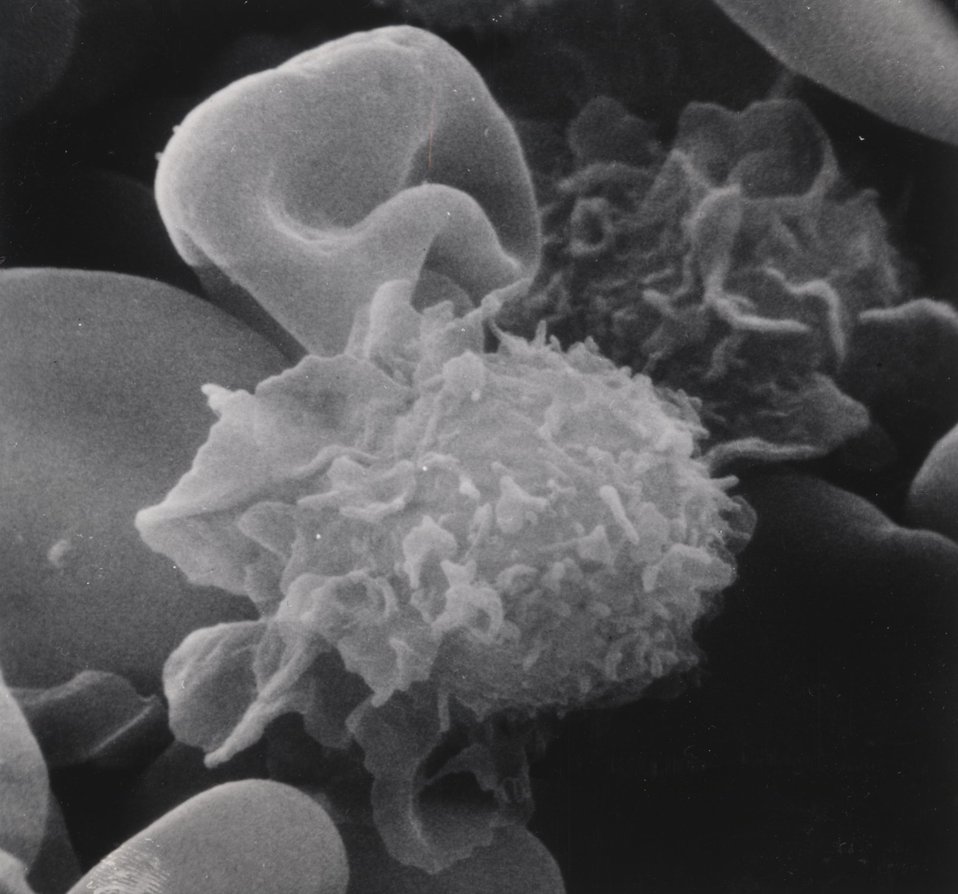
'Hairy' cell type with surface features on monocytes (ruffled membranes at one pole) and lymphocytes.